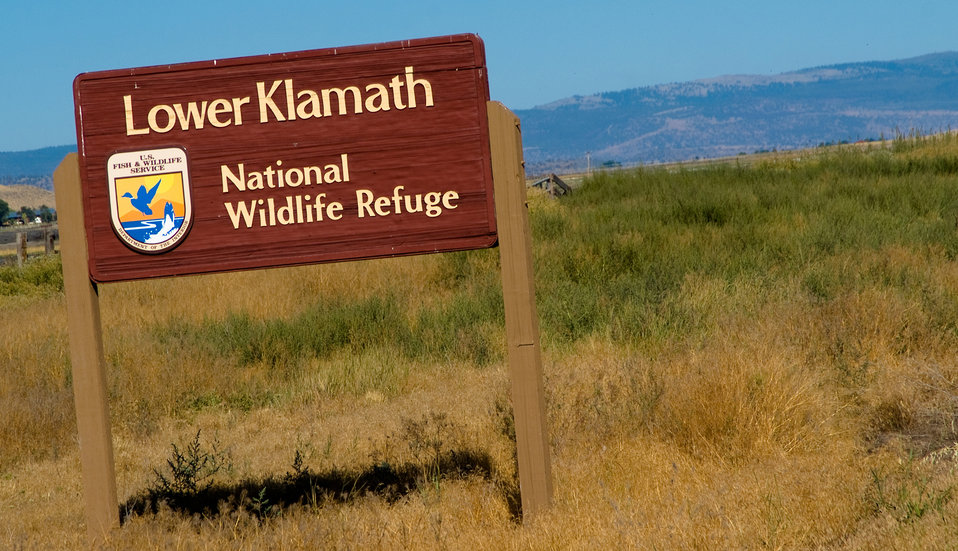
Lower Klamath NWR sign

Lower Klamath National Wildlife Refuge